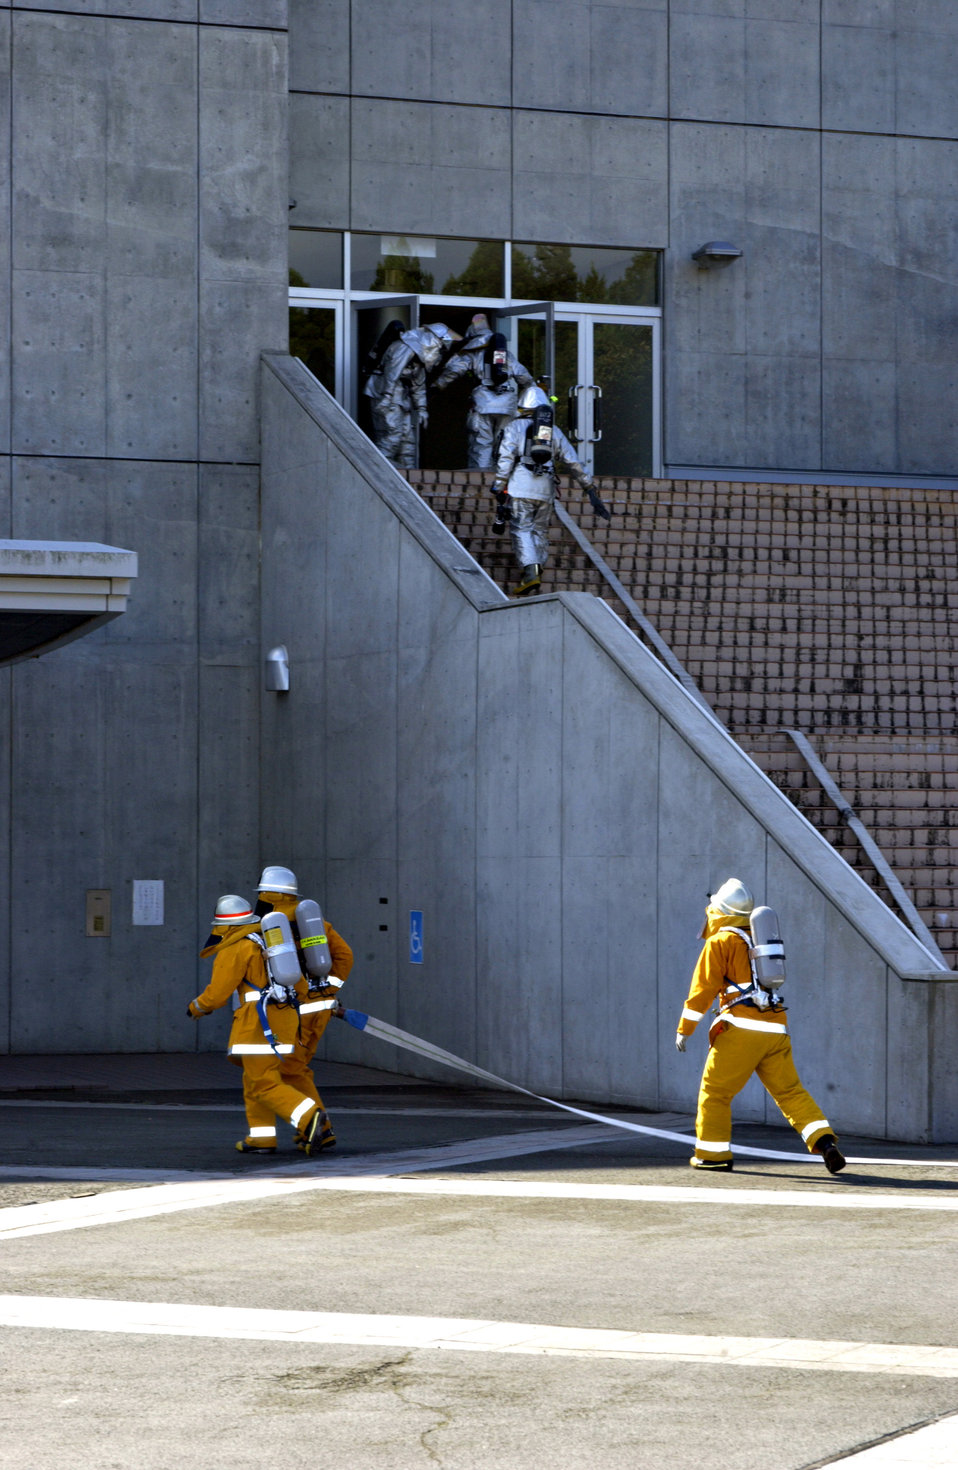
Misawa partners with city for disaster exercise

Misawa City and Misawa Air Base firefighters enter the Misawa Ice Arena to rescue victims as part of a Misawa City Disaster Preparation Exercise Oct. 14 in Japan. This exercise involved members from the U.S. Air Force and Navy, as well as Misawa City first responders.